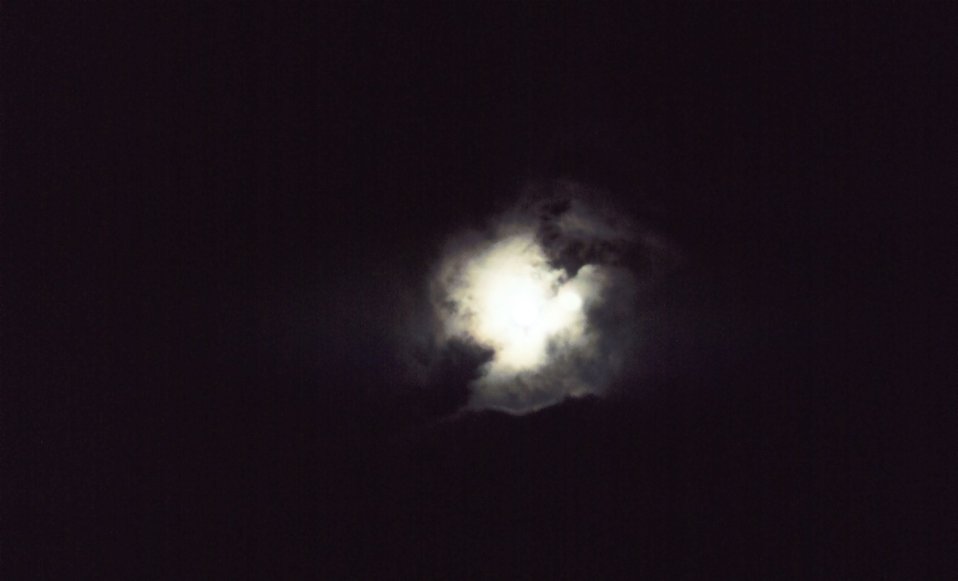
Moon through the clouds